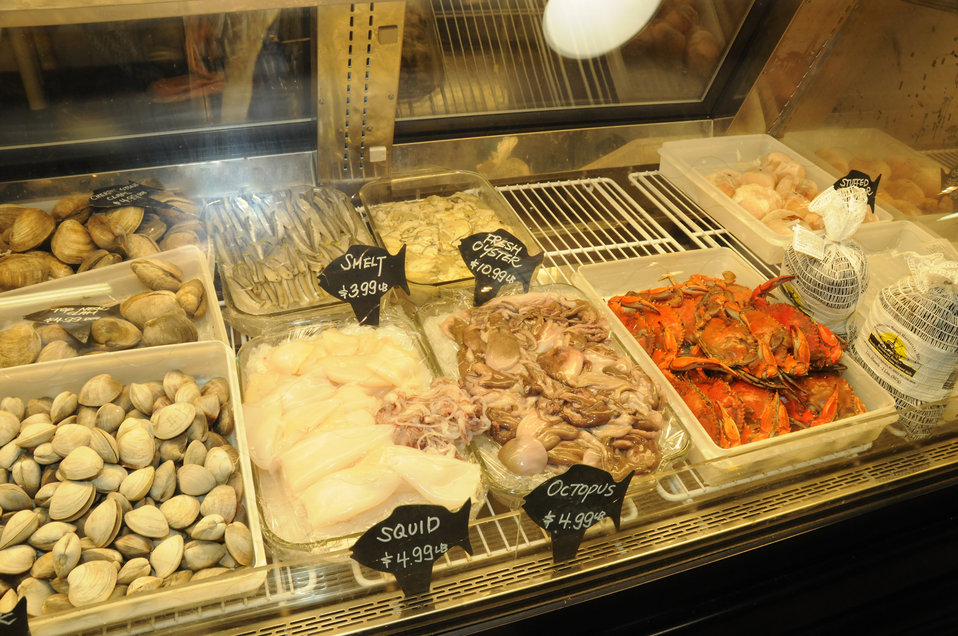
The Reading Terminal Market offers produce fresh from the field to the people of Philadelphia, PA on April 3, 2009. There are Amish specialties, fruits, vegetables, meats, seafood, and poultry. Reading Terminal Market opened for business in 1892 with approximately 78,000 square feet and almost 800 spaces for vendors. The Market was revitalized in the 1990’s and today is still the gastronomic bazaar that its original planners had envisioned. Many of the historic Market stands survived the reconstruction and are once again filled with local produce, fresh eggs, milk, meats, poultry, seafood, handmade crafts, jewelry, and clothing. The Market is home to more than 80 merchants, two of whom are descendants of the original stand holders from a century before.